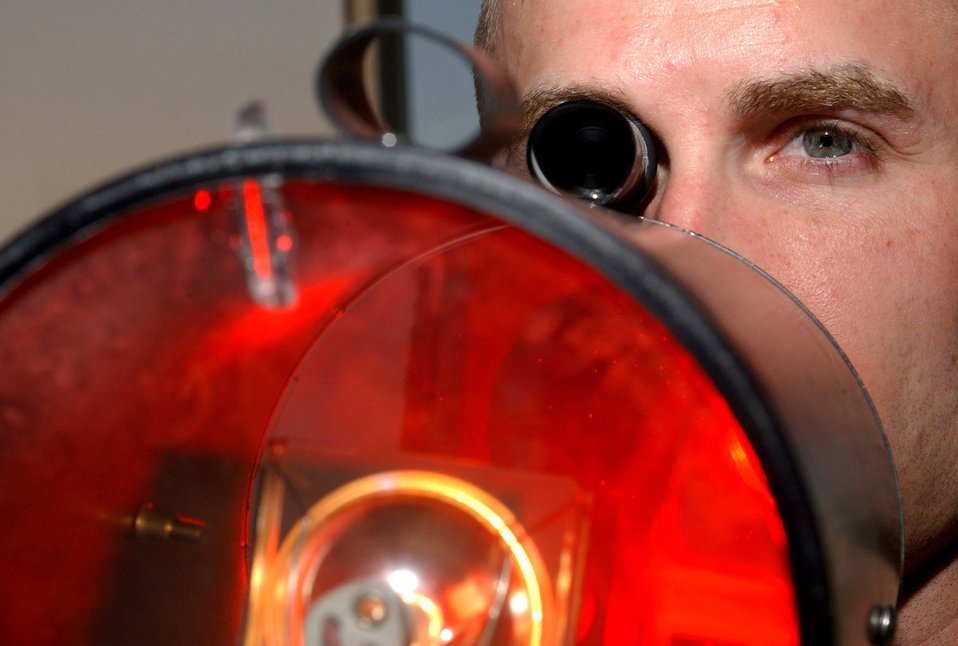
In focus

Senior Airman Adam Smith practices using a light gun, which communicates with aircraft and vehicles when all communications are down, Wednesday, March 8, 2006, at Ali Base, Iraq. Airman Smith is an air traffic controller with the 407th Expeditionary Operations Support Squadron,